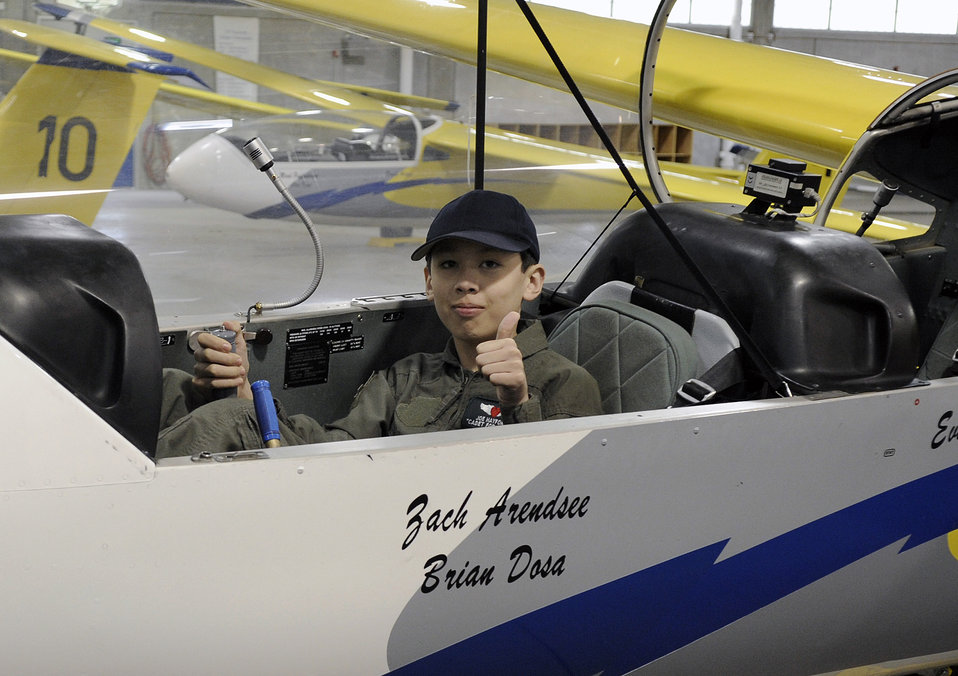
Clouds lift for 'Cadet for a Day'

Cadet for a Day Joe Hayford sits in the cockpit of one of the U.S. Air Force Academy gliders during a visit to the Academy organized by the Make-A-Wish foundation. Cadet Hayford's three-day visit included numerous events sponsored by cadet squadron 4.